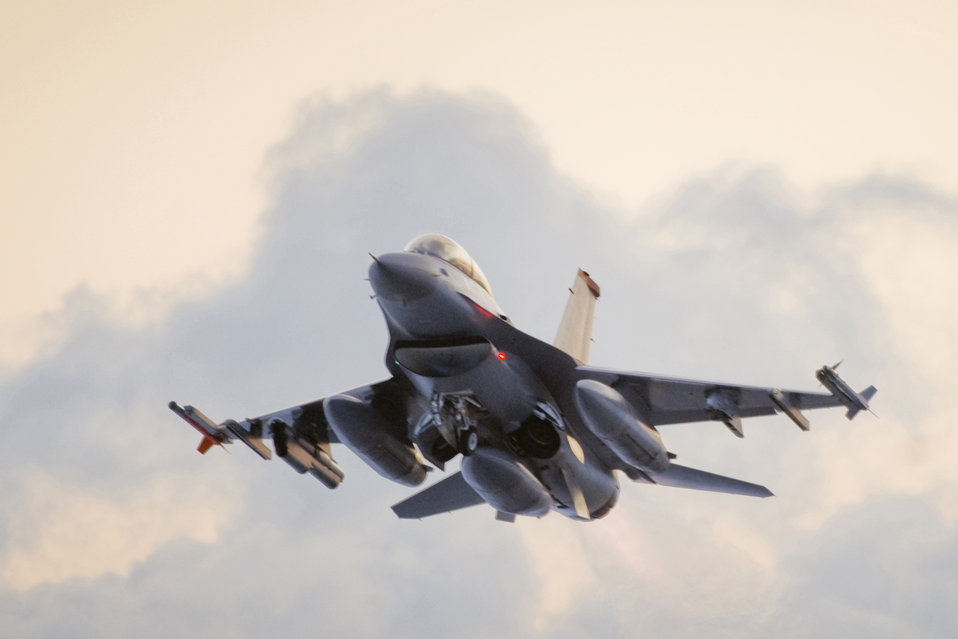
Rising with the sun

While piloting an F-16 Fighting Falcon, Capt. Craig Phelps takes off into the morning sky Feb. 3, 2010, during an exercise at Misawa Air Base, Japan.